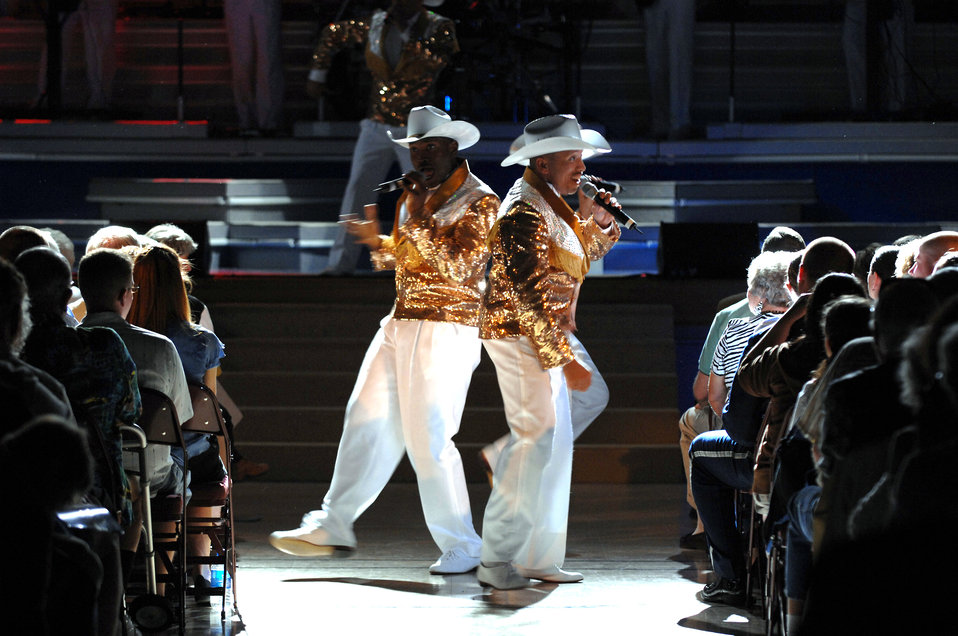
Tops in Blue Airmen strut their stuff

Tops in Blue Airmen sing to the crowd May 24 at the Tays Center near Holloman Air Force Base in Alamogordo, N.M. The 40-member group's goal is to enhance mission productivity for Air Force members around the world. Tops in Blue showcases music, dance and comedy, all performed by active-duty Airmen who perform 90 minutes of non-stop live entertainment.